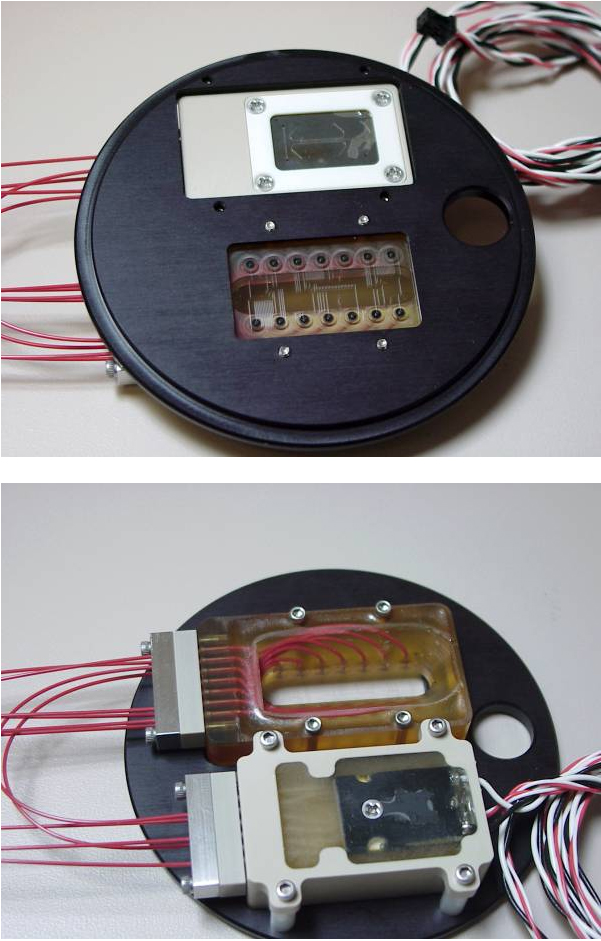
Shown is the top and bottom of a single-cell MICA platform array and cell sorter that are mounted in a microscopic plate.

The MICA platform is an extremely versatile tool that can facilitate study of a wide variety of cellular processes. It has consistently demonstrated its value in initial applications at Sandia, which have focused on clarification of immune cell responses to potentially deadly microbial pathogens. MICA enables researchers to precisely target, sort, and measure samples as small as a single cell in an automated system that includes flow cytometry.